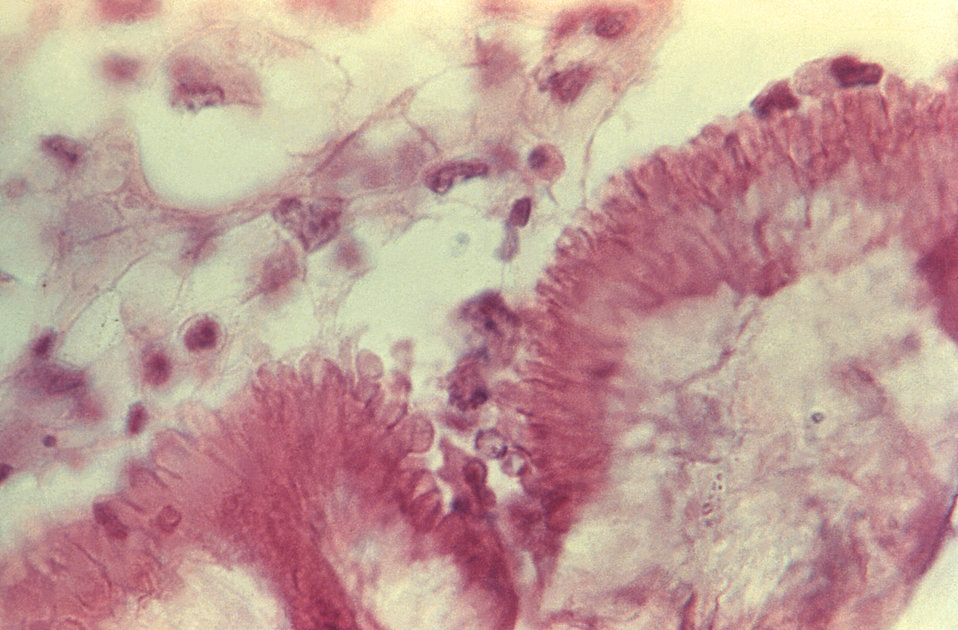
Under a magnification of 970x, this Gram-stain photomicrograph of a bovine (cow) tongue tissue specimen revealed the presence of an actinobacillosis granule, which highlights the granule's 'clubbing' histomorphology.